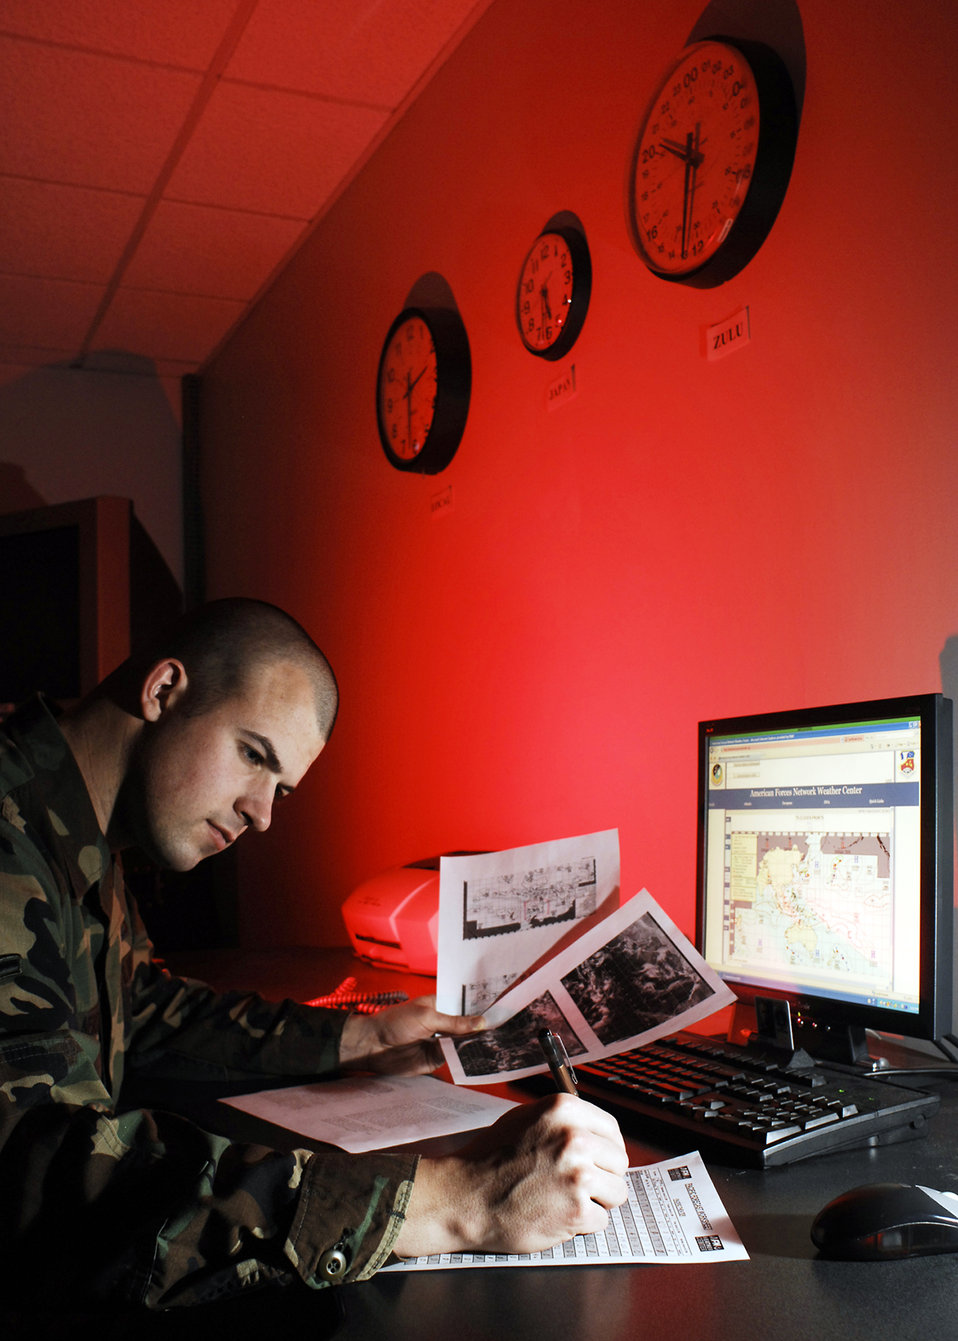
Weather watchers

Airman Joseph Newlon reviews significant weather depictions from the 17th Operational Weather Squadron at Hickam Air Force Base, Hawaii, Jan. 22 at Offutt Air Force Base, Neb. Airman Newlon from Keokuk, Iowa, is a broadcast weather technician at the American Forces Network Weather Center.